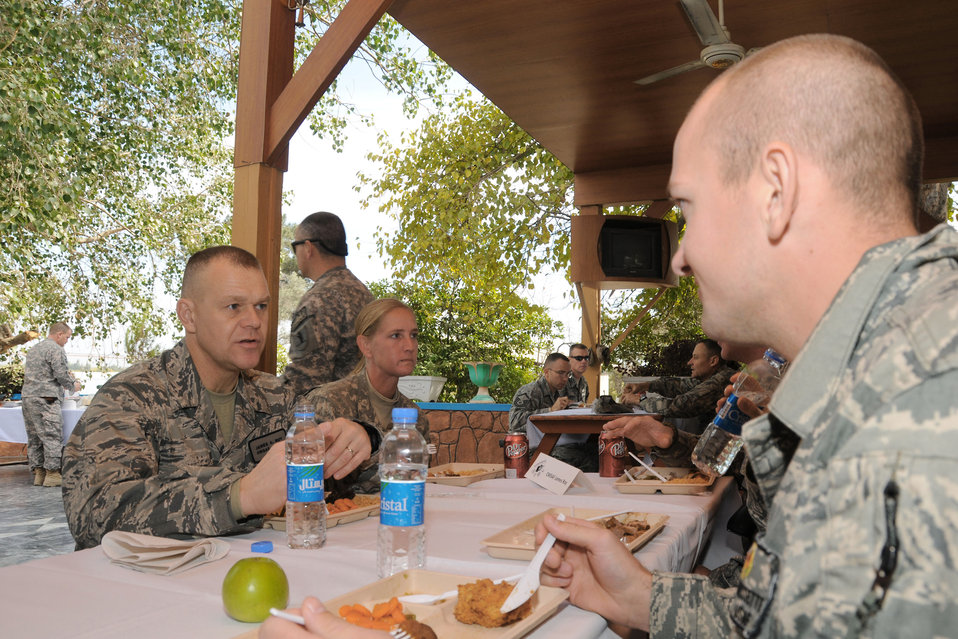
Chief Master Sgt. of the Air Force James A. Roy listens to Tech. Sgt. Shawn Newland about ongoing construction of the Saracha Bridge Nov. 28, 2009, in Jalalabad, Afghanistan. Sergeant Newland is the Nangarhar Provincial Reconstruction Team project manager deployed from the 99th Civil Engineer Squadron at Nellis Air Force Base, Nev.